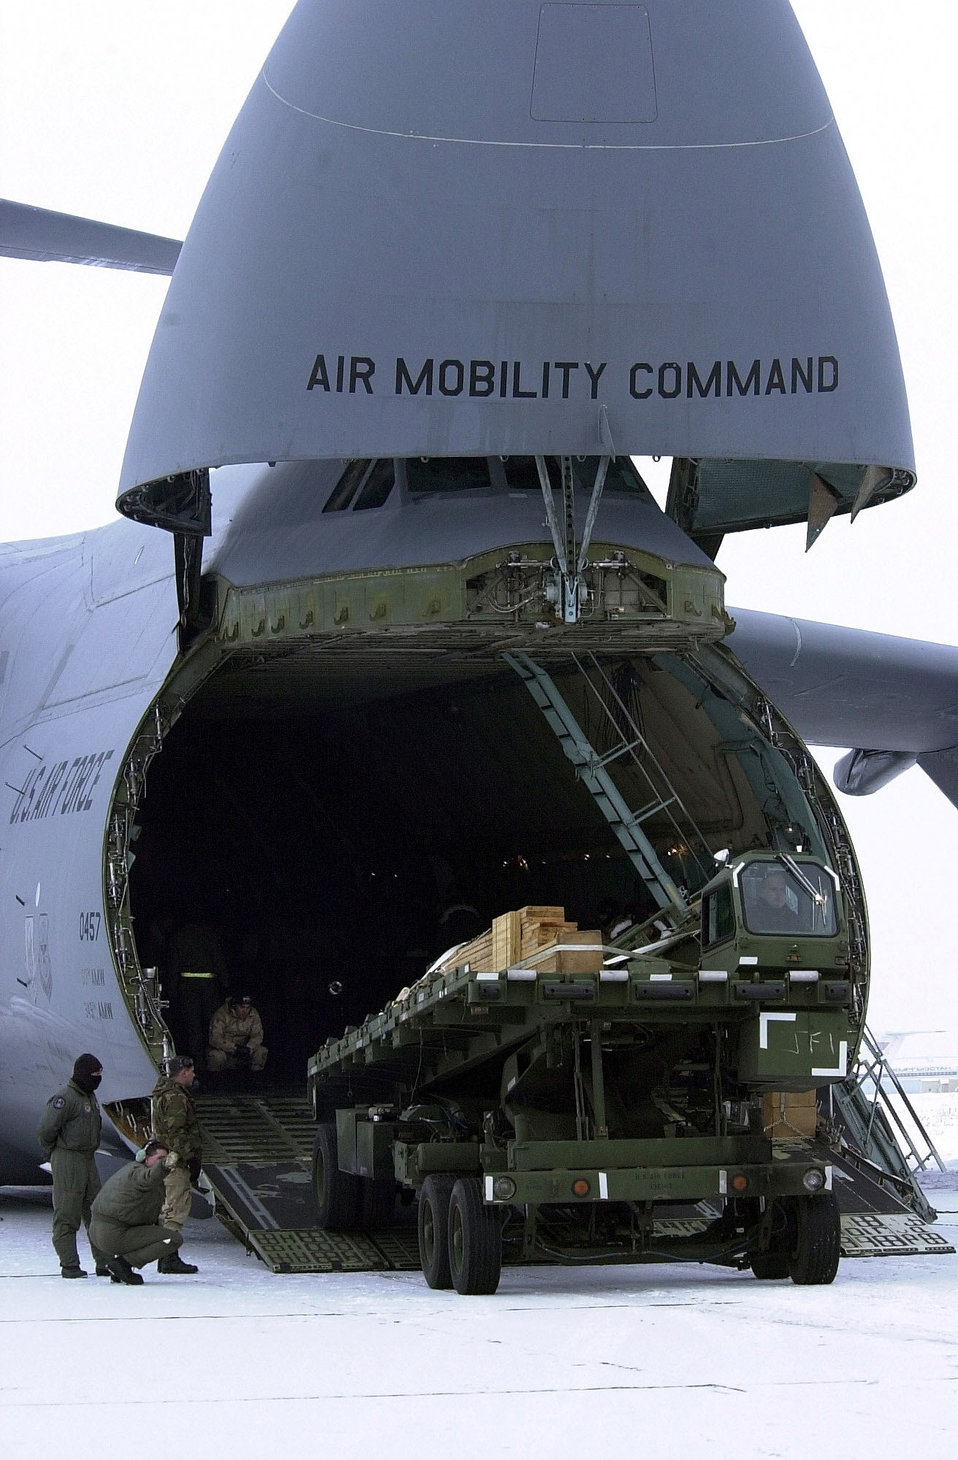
Cargo lifter

OPERATION ENDURING FREEDOM -- A U.S. Air Force Reserve aircrew offloads people and equipment at the airport in Manas, Kyrgyzstan, in support of Operation Enduring Freedom on Dec. 18. The aircrew is from the 439th Airlift Wing in Westover, Mass. Kyrgyzstan is just one of many countries from around the globe assisting in the humanitarian effort in Afghanistan.